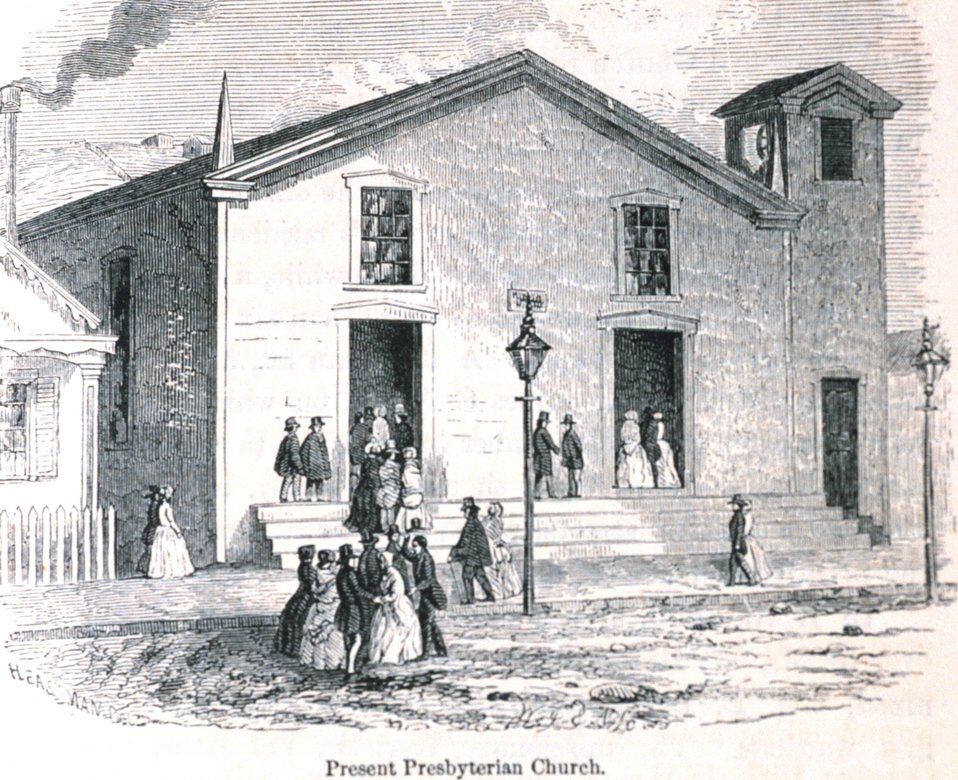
The present Presbyterian Church (as of 1854.) In: 'The Annals of San Francisco'. Frank Soule, John Gihon, and James Nesbit. 1855. Page 693. D. Appleton & Company, New York. F869.S3.S7 1855.